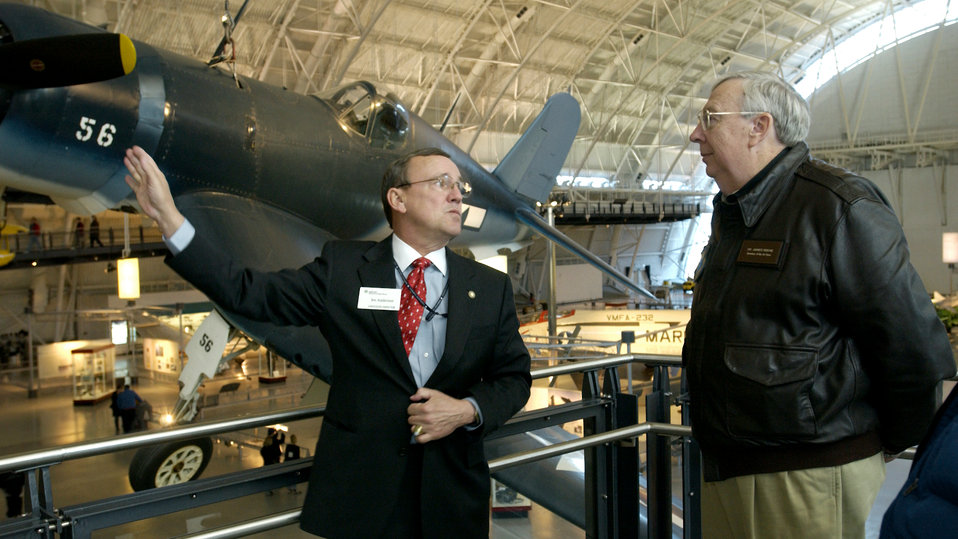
Secretary tours new museum

CHANTILLY, Va. -- Retired Maj. Gen. Joseph T. Anderson (left) explains future growth plans for the National Air and Space Museum's Steven F. Udvar Hazy Center here to Air Force Secretary Dr. James G. Roche on Dec. 21. Secretary Roche was at the center to view the Imax film